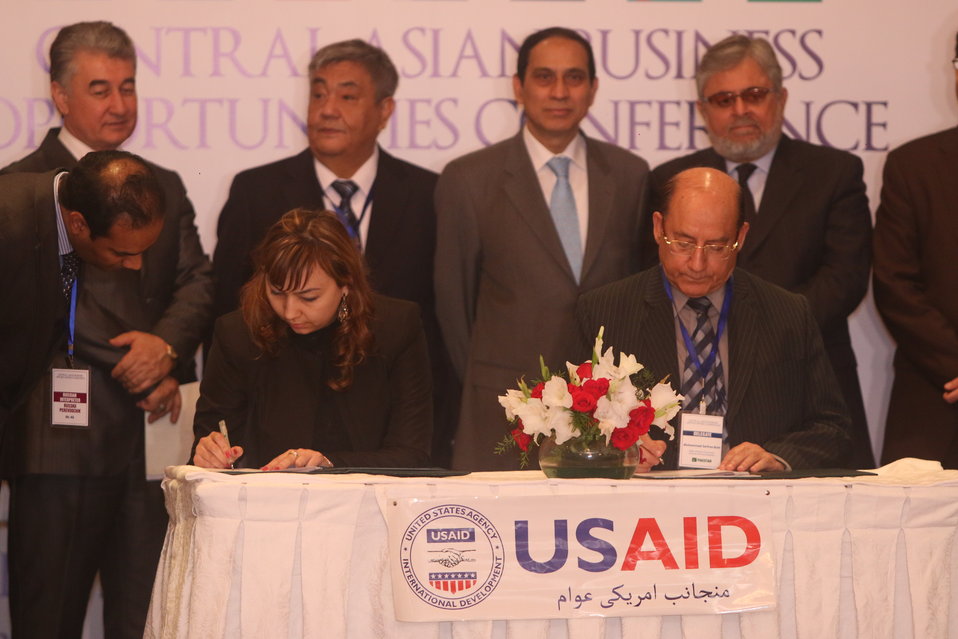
CABOC 2014